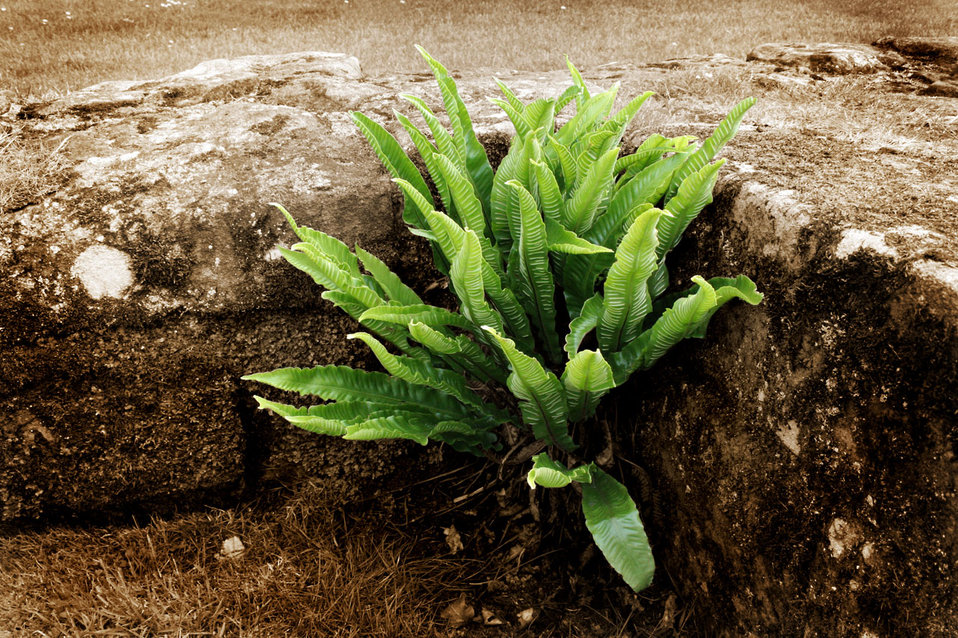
Fern plant growing from the stone wall.